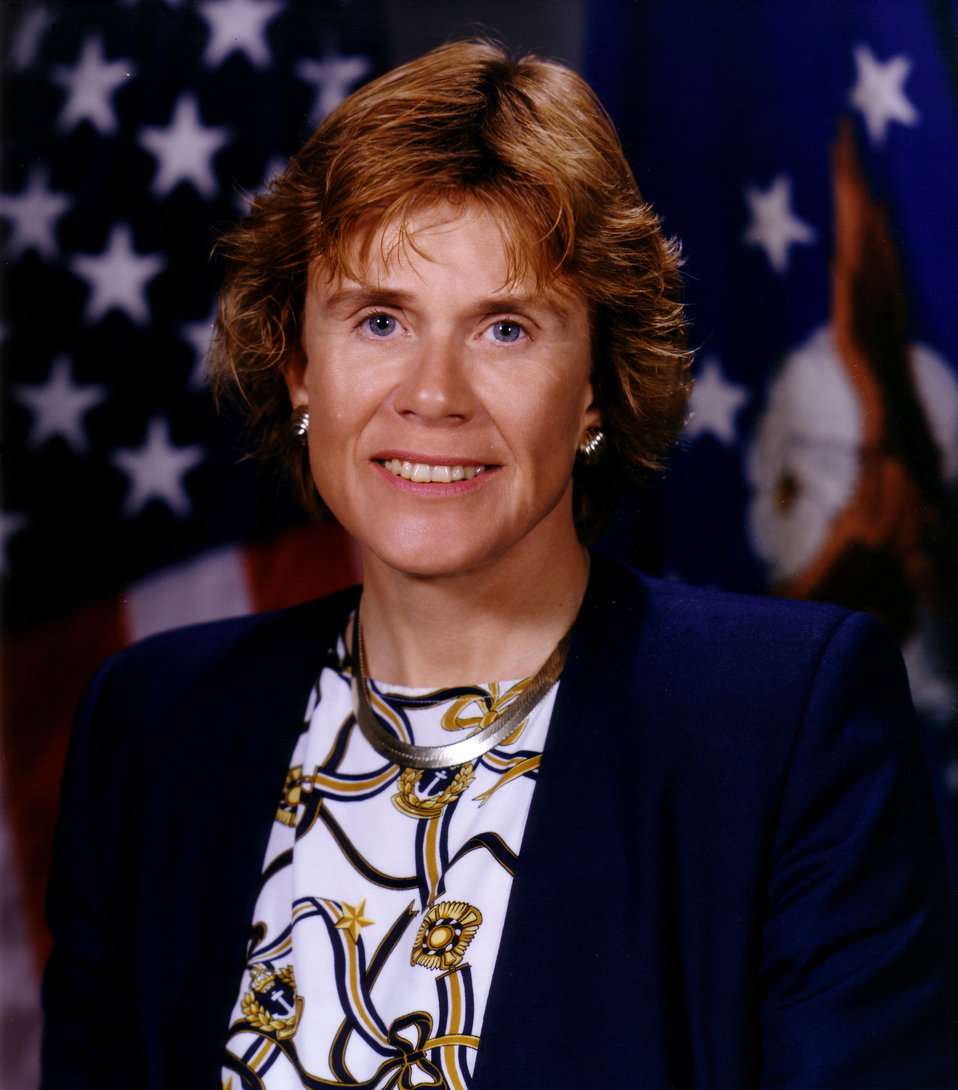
Dr. Sheila Widnall

1990's -- Sheila E. Widnall was the 18th secretary of the Air Force and the first woman to hold the office.